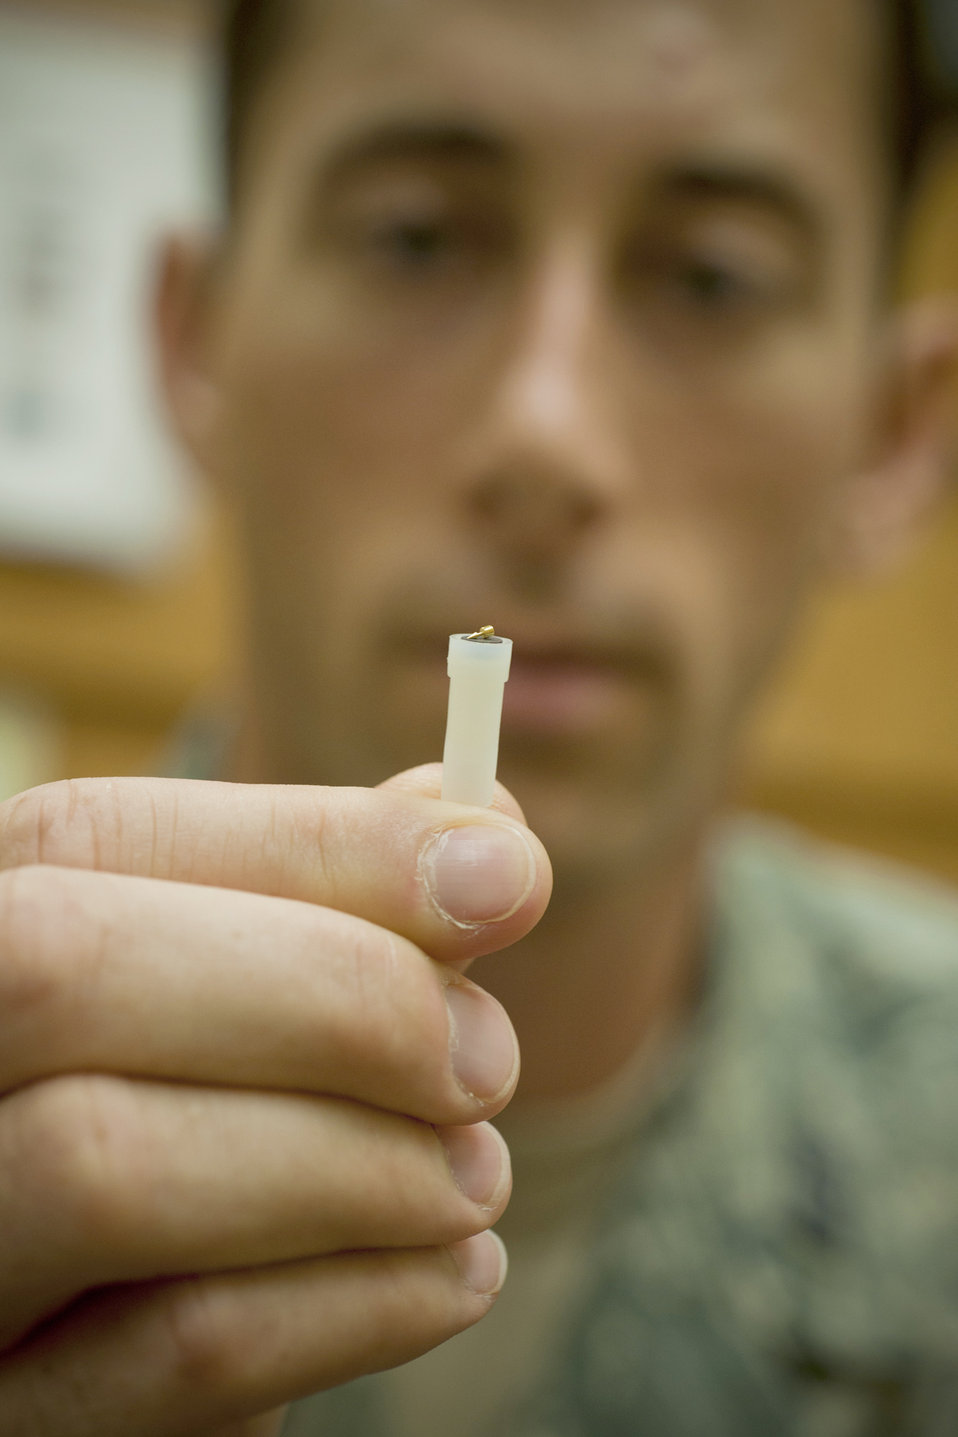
acupuncture

Capt. Trevor Ambron shows an example of an acupuncture needle Oct. 14, 2010, at Moody Air Force Base, Ga. The needle is especially designed for battlefield use and is smaller than most acupuncture needles. Captain Ambron is an 822nd Base Defense Squadron physician's assistant.